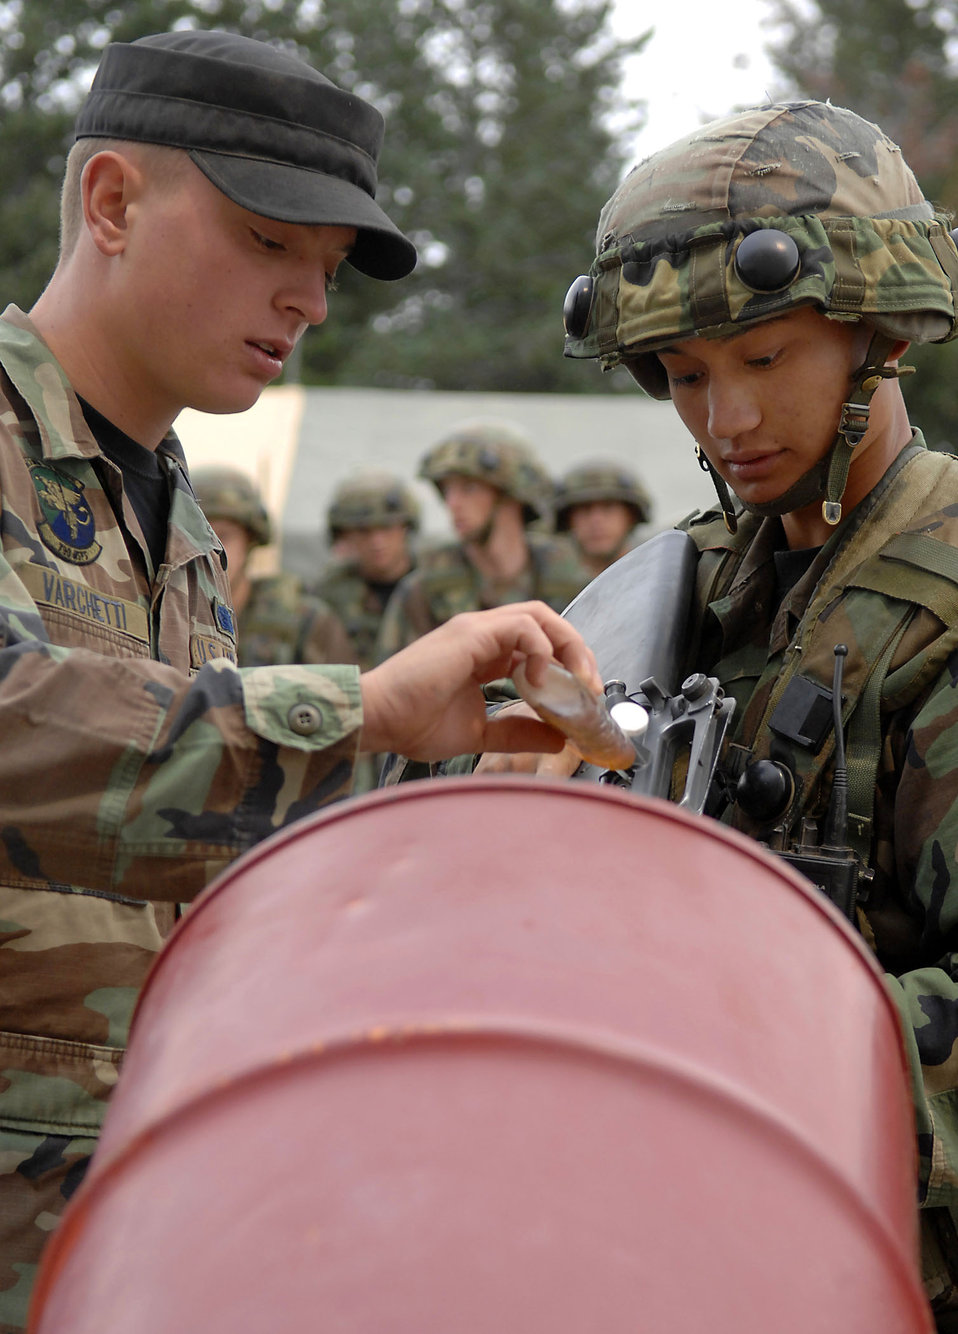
Global Engagement teaches leadership, base deployment

Senior Airman Ryan Varchetti (left) assists Cadet 3rd Class Daniel Tortuga with clearing and preparing his weapon during the Global Engagement course July 10 at the U.S. Air Force Academy in Colorado. The purpose of Global Engagement is to lay the foundation of attitudes, knowledge and skills necessary to lead, fight, and win in a dynamic and diverse global environment. Airman Varchetti is a security forces instructor from F.E. Warren Air Force Base, Wyo.